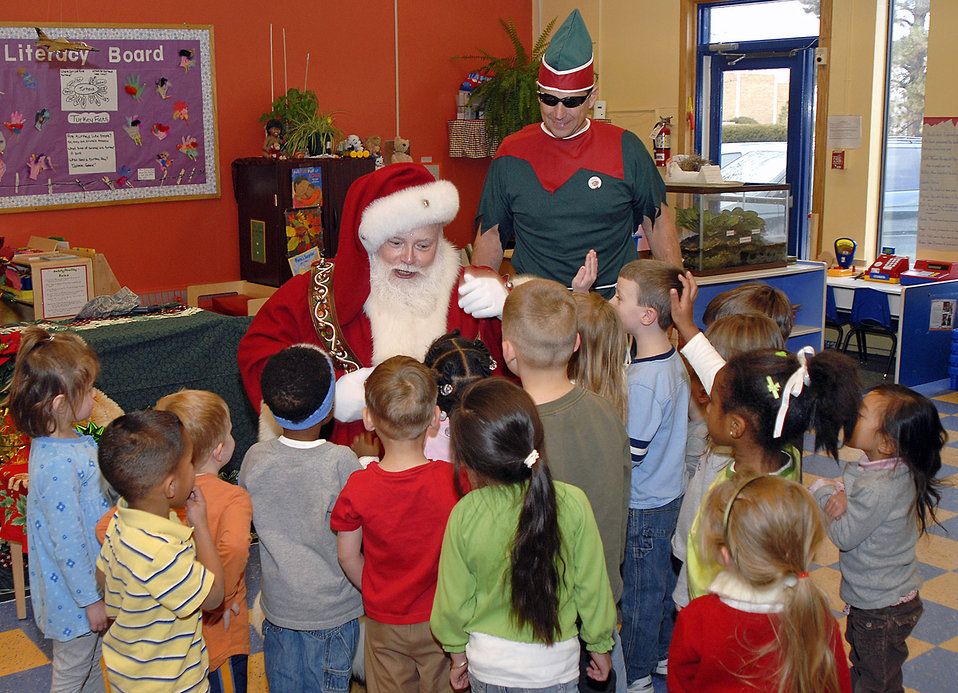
St. Nick visits Peterson

Santa with Elf Dee talks with the children at the Child Development Center at Peterson Air Force Base, Colo.